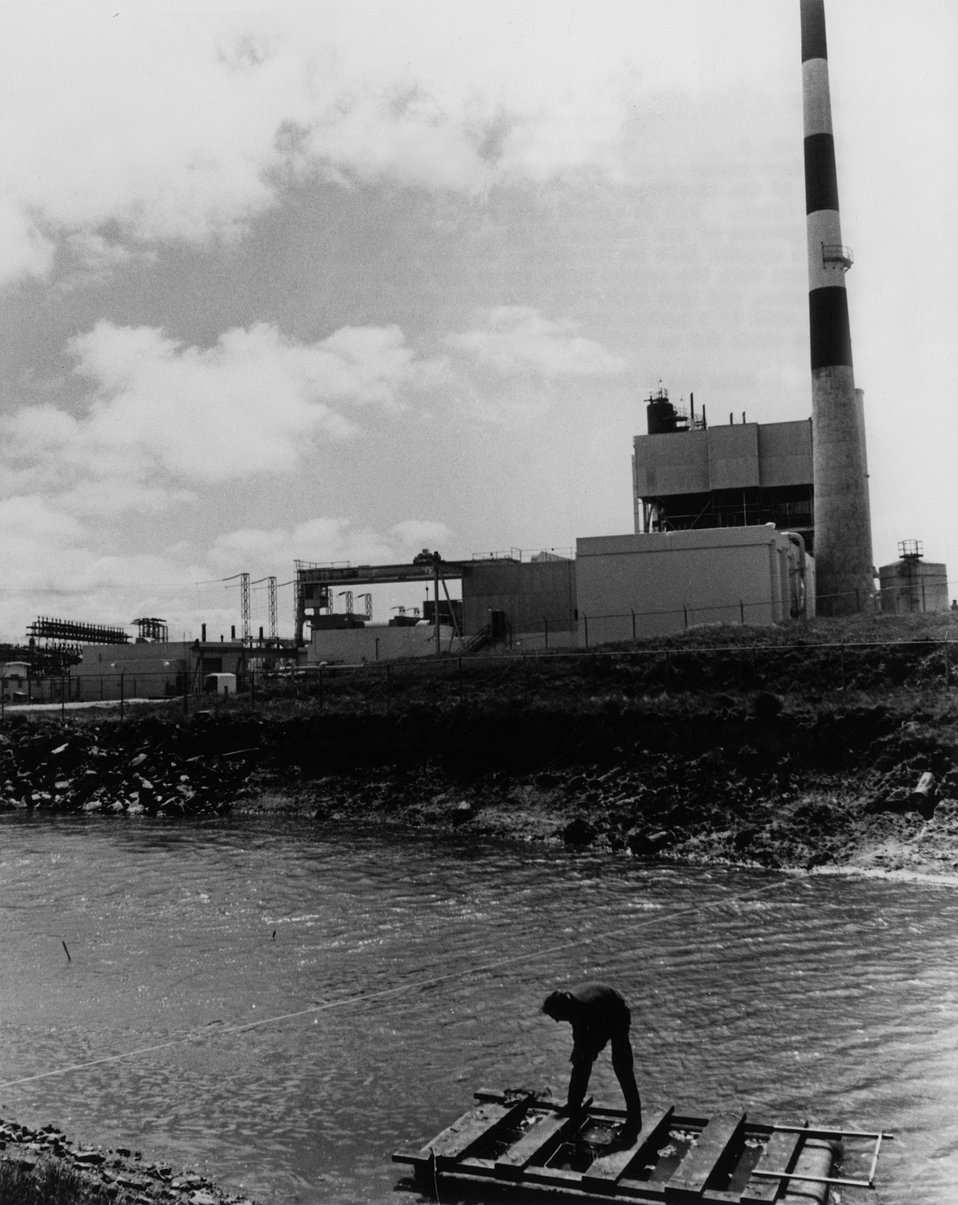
Pacific Gas and Electric Company aquatic biologist James Adams measures the volume and size of oysters growing in the discharge canal at the Humbolt Bay Nuclear Plant.